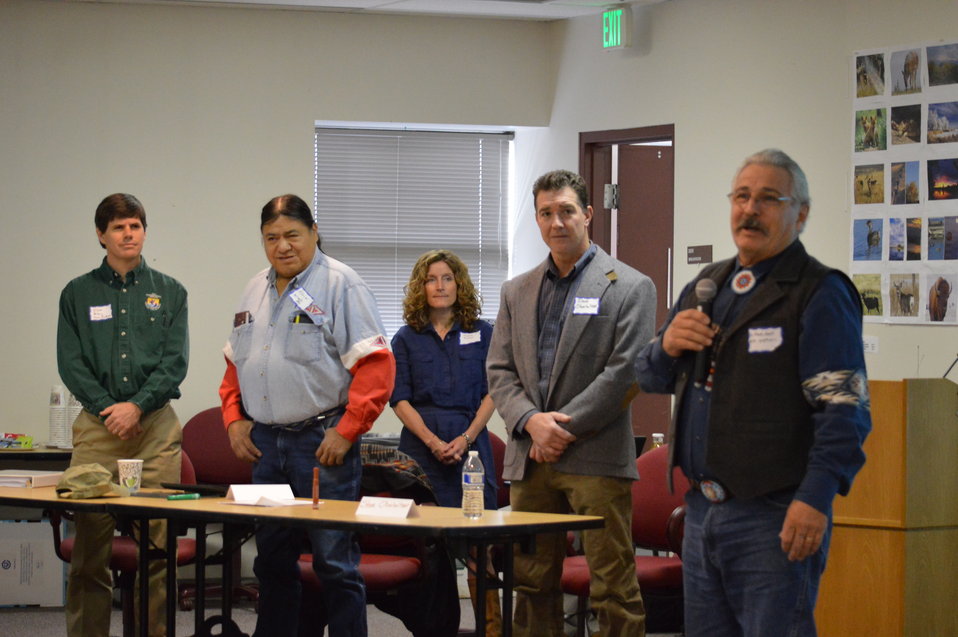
Opening Prayer at Eagle Summit III

Opening prayer by Fred Matt (NAFWS Director) and panel at the Eagle Summit III in Denver, Colorado on March 20, 2014 at the Rocky Mountain Arsenal National Wildlife Refuge.